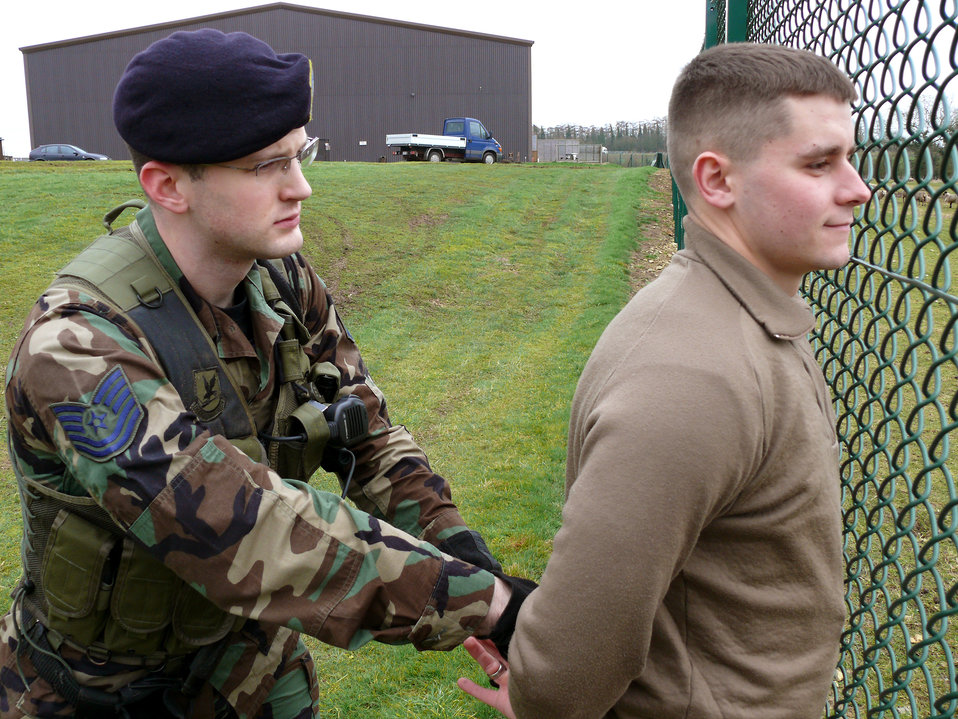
Guardsmen, reservists augment RAF Croughton security forces

Tech. Sgt. Dustin Schimp participates in an exercise Feb. 27 at Royal Air Force Croughton, United Kingdom. As a combat arms specialist for the 434th Security Forces Squadron, he apprehended the simulated suspect after a short chase. Sergeant Schimp is a reservist from Indiana augmenting the 422nd Security Forces Squadron at RAF Croughton on an 18-month deployment.